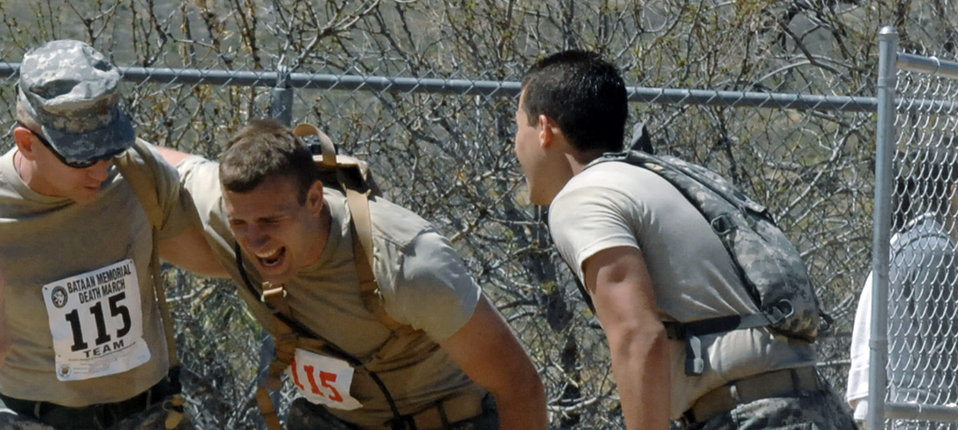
Cannon members march to honor Bataan POWs

A struggling marcher in the Bataan Memorial Death March is helped toward the finish line by teammates March 30 at White Sands Missile Range, N.M. More than 4,400 runners and marchers participated in the 19th annual 26.2 or 15-mile run/walk.